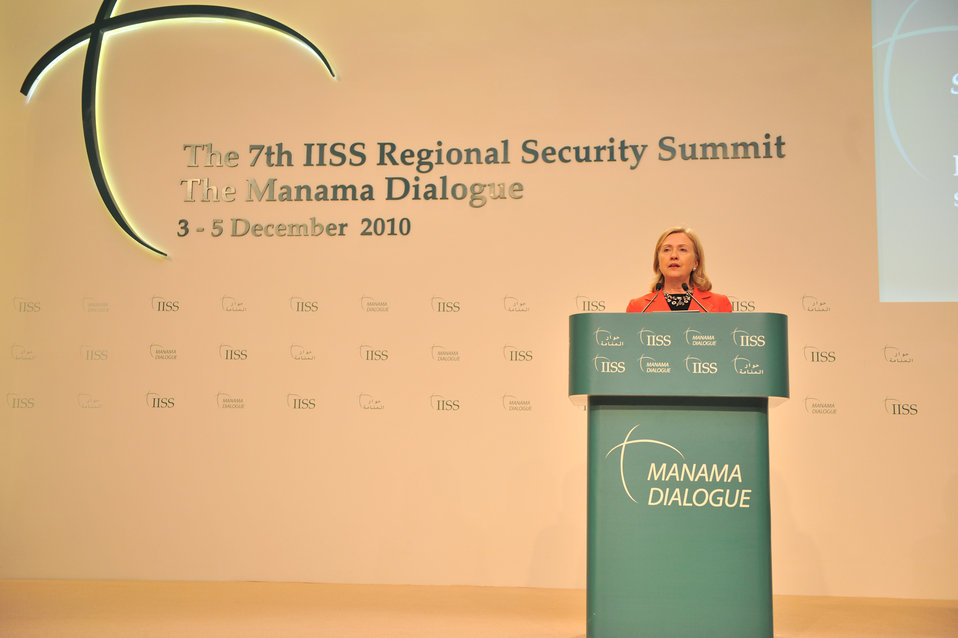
manama 6Secretary Clinton Delivers Remarks at the Opening Dinner

U.S. Secretary of State Hillary Rodham Clinton delivers remarks at the opening dinner of the Seventh IISS Regional Security Summit Manama Dialogue in Bahrain, December 4, 2010.